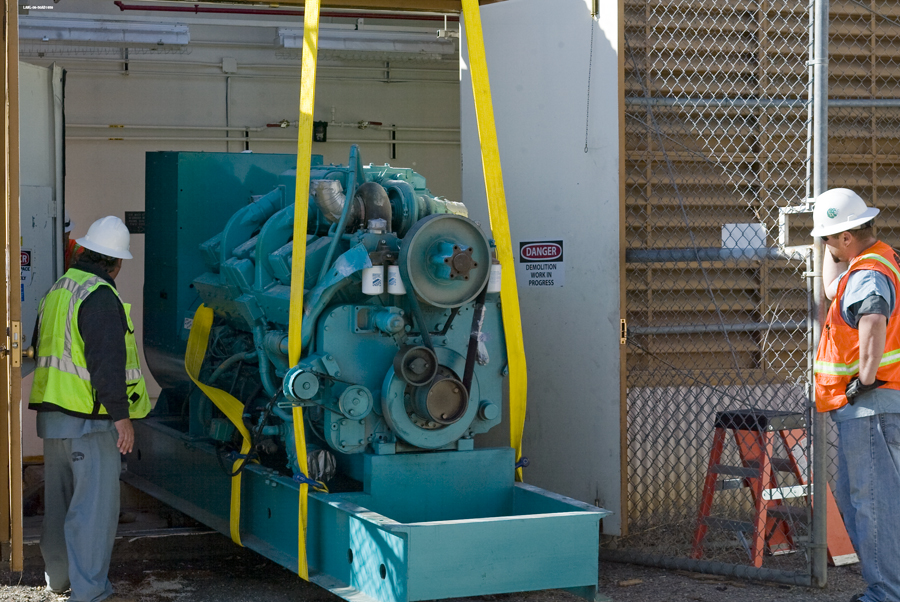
LANL - generator as salvage

A diesel generator removed from the Tritium Systems Test Assembly (TSTA) facility became the first piece of large equipment sent to salvage for reuse from the project.